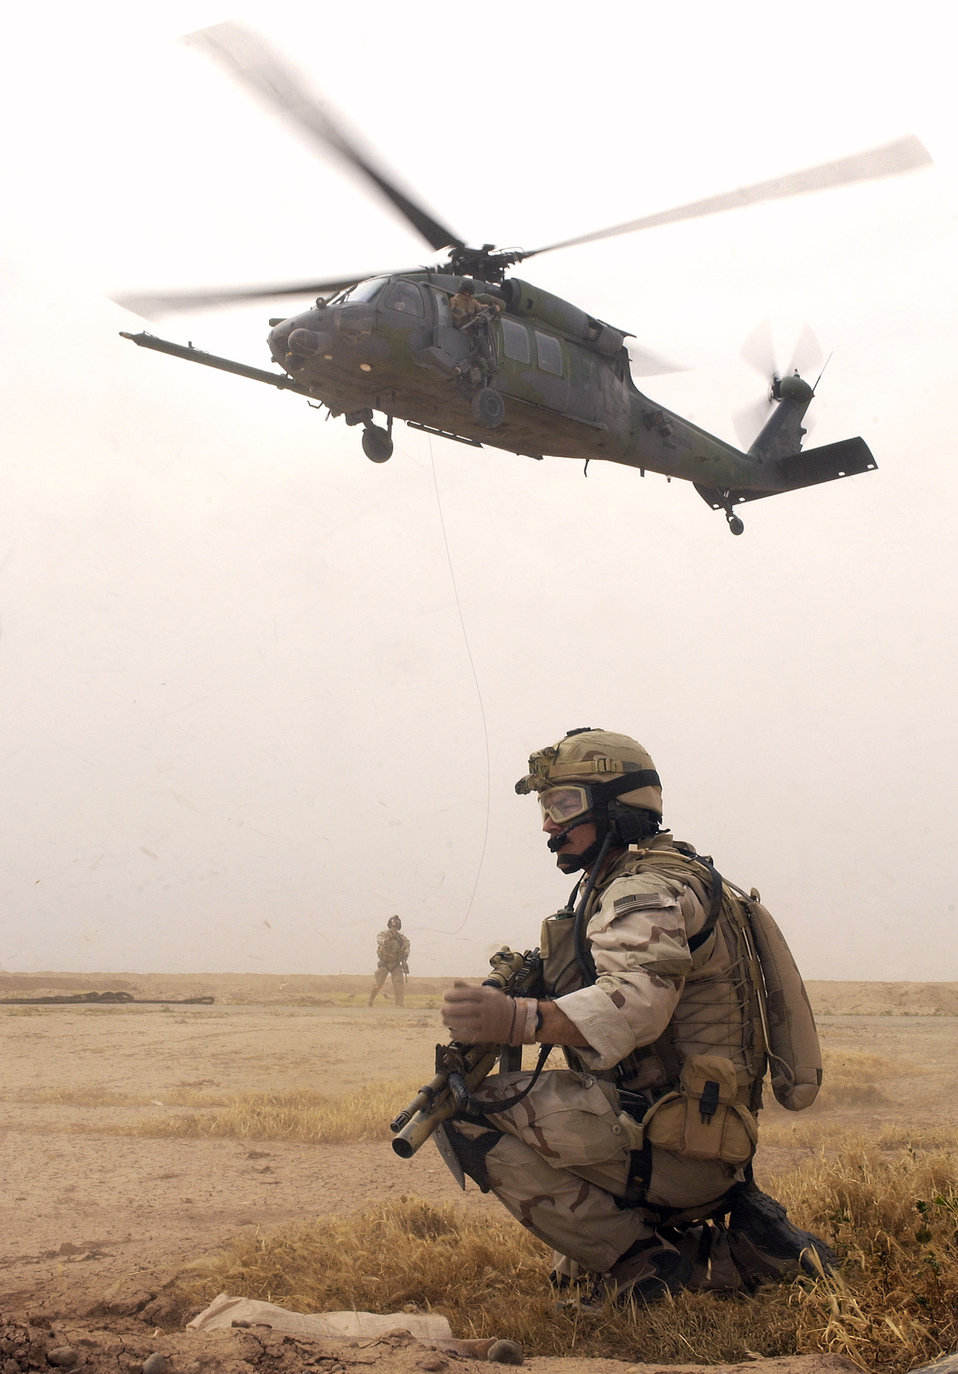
Secure zone

BALAD AIR BASE, Iraq -- An HH-60G Pave Hawk helicopter from the 64th Expeditionary Rescue Squadron comes to pickup pararescuemen here March 30.